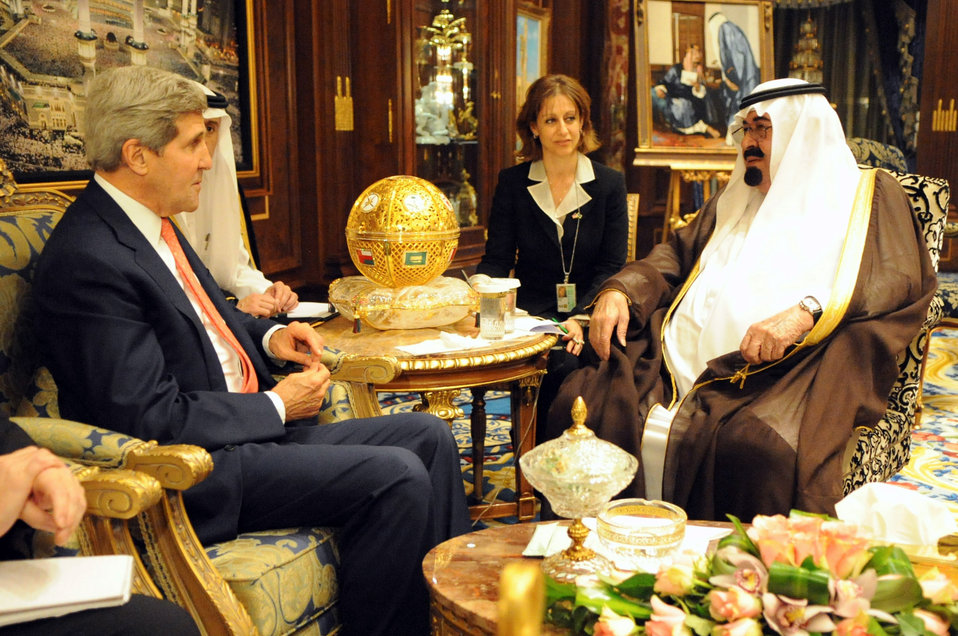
Secretary Kerry Meets With King Abdullah of Saudi Arabia

U.S. Secretary of State John Kerry delivers a greeting from President Barack Obama during a meeting with King Abdullah of Saudi Arabia in Riyadh on November 4, 2013.